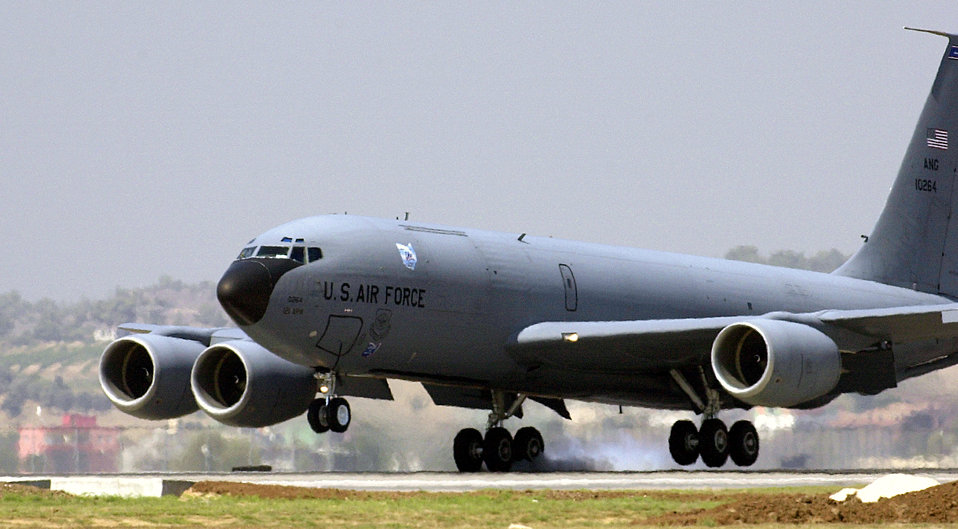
Tanker support

INCIRLIK AIR BASE, Turkey -- A KC-135 Stratotanker from the Air National Guard's 121st Air Refueling Wing at Rickenbacker International Airport, Ohio, touches down on the flightline here. U.S. officials are sending four KC-135 Stratotanker aircraft and six aircrews to provide air-refueling support for operations Enduring Freedom and Iraqi Freedom. Aircraft and people began arriving Aug. 19 and should be in place by Aug. 23.